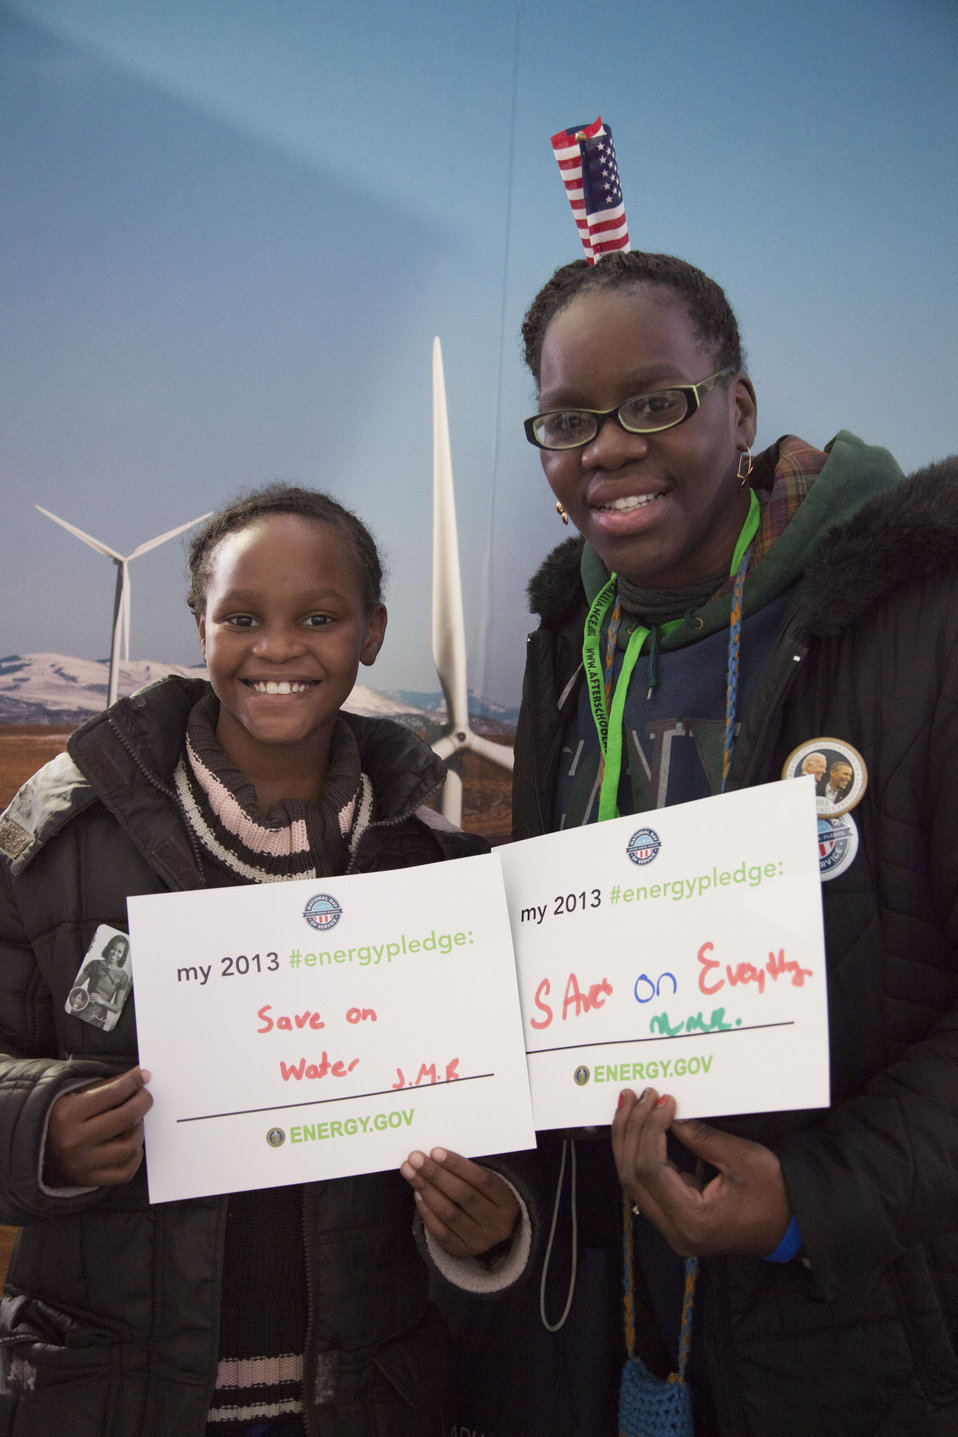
What's your #energypledge?